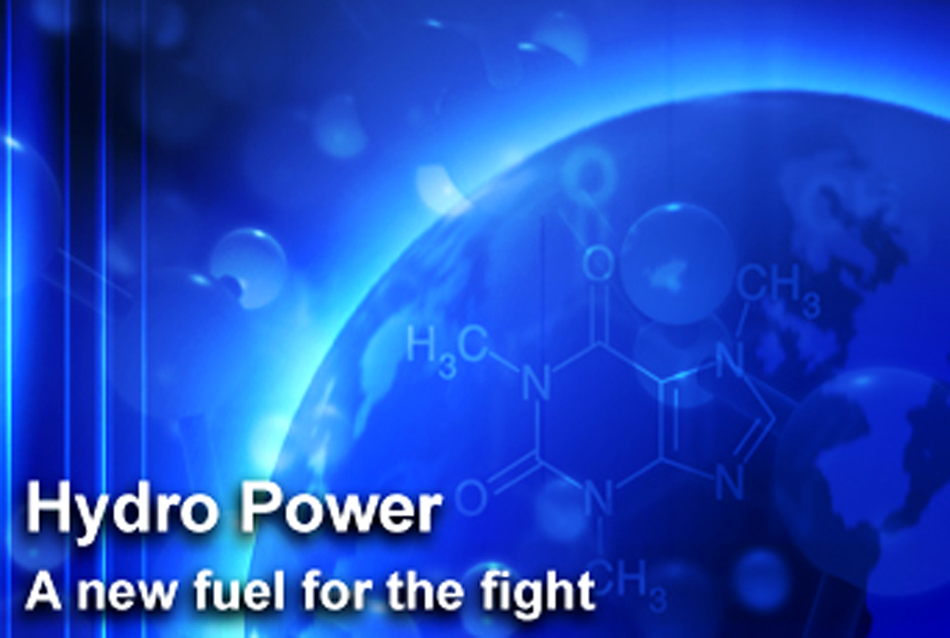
Hydro Power

The hydrogen plant at Hickam AFB, Hawaii is the starting point for the Air Force in the pursuit to research ways to find new energy sources. It is also the spearhead for the Department of Defense's fight to conserve energy, create cleaner air and to break its dependence on fossil fuel.